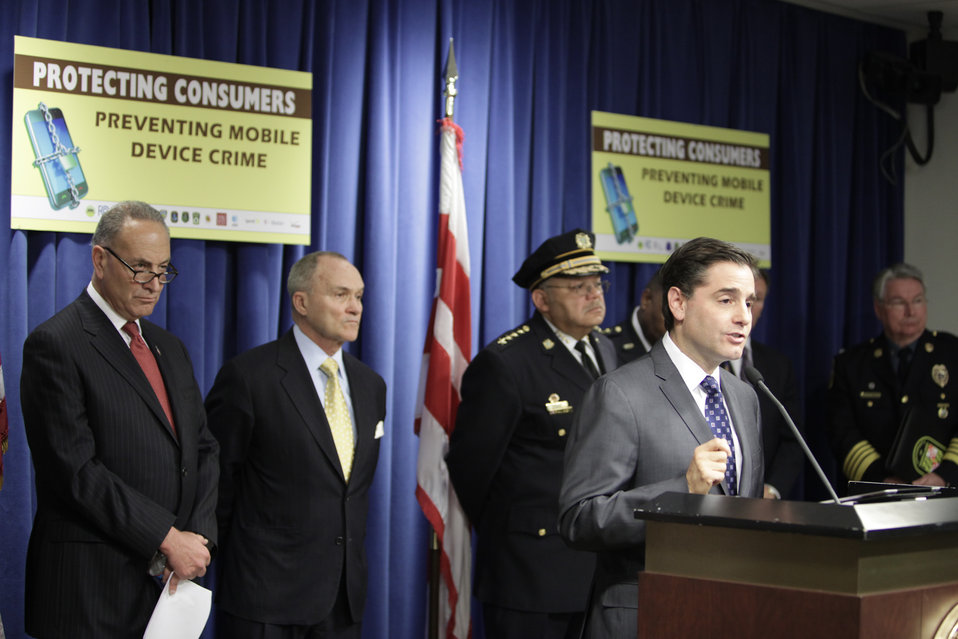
FCC Chairman Genachowski speaks about consumer protection against theft of data and smartphones at the John A. Wilson Building in Washington, DC on April 10, 2012.